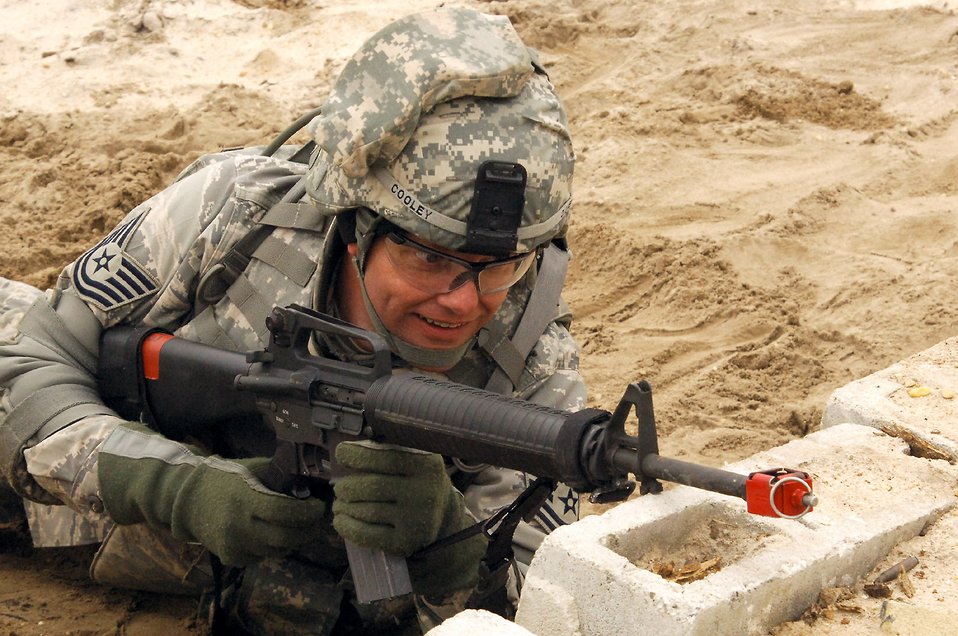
Airmen master Soldier skills training

Tech Sgt. Richard Cooley stays ever vigilant during Individual Movement Technique training at the Fort Dix, N.J., improvised explosive device range. The training teaches troops how to conduct maneuvers in an unknown, often hostile, environment. Sergeant Cooley and his fellow Airmen, members of USAF class 25, are completing the Soldier Skills Training Course as they prepare for various deployments around the globe. There are about 75 Airmen currently going through the month-long course.